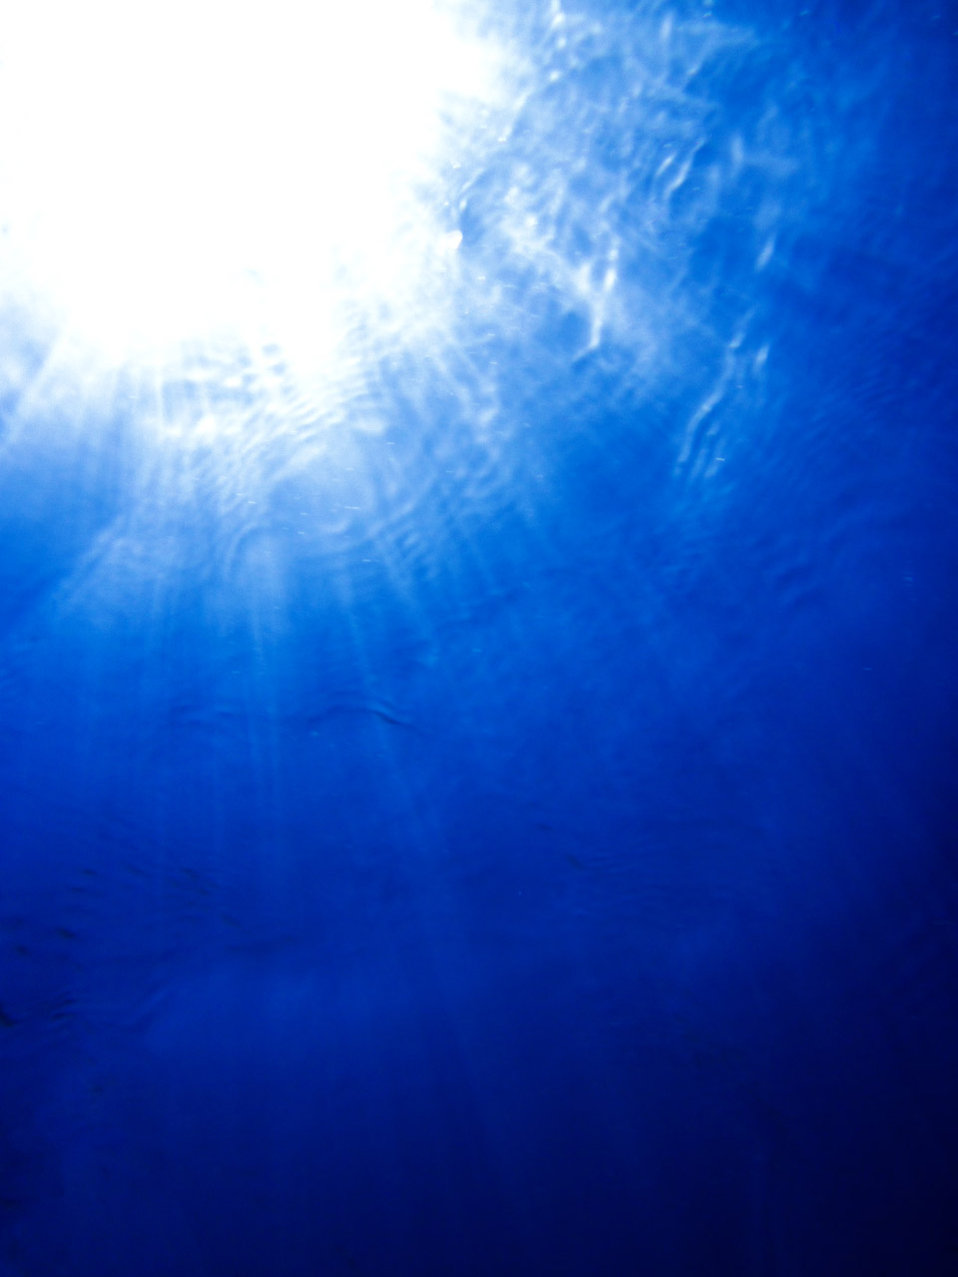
Underwater solar rays

Blue underwater light rays.